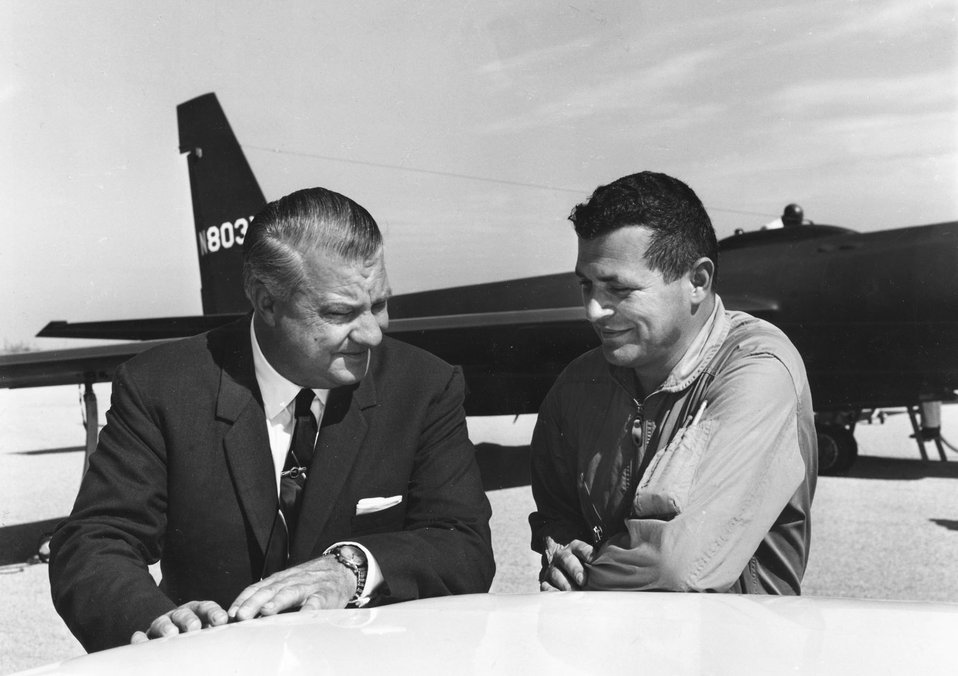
Former Air Force pilot posthumously awarded Silver Star

Francis Gary Powers (right) talks to U-2 designer Kelly Johnson in 1966. Powers was an Air Force fighter pilot recruited by the CIA in 1956 to fly civilian U-2 missions deep into Russia. Powers and other Air Force Reserve pilots resigned their commissions to become civilians.